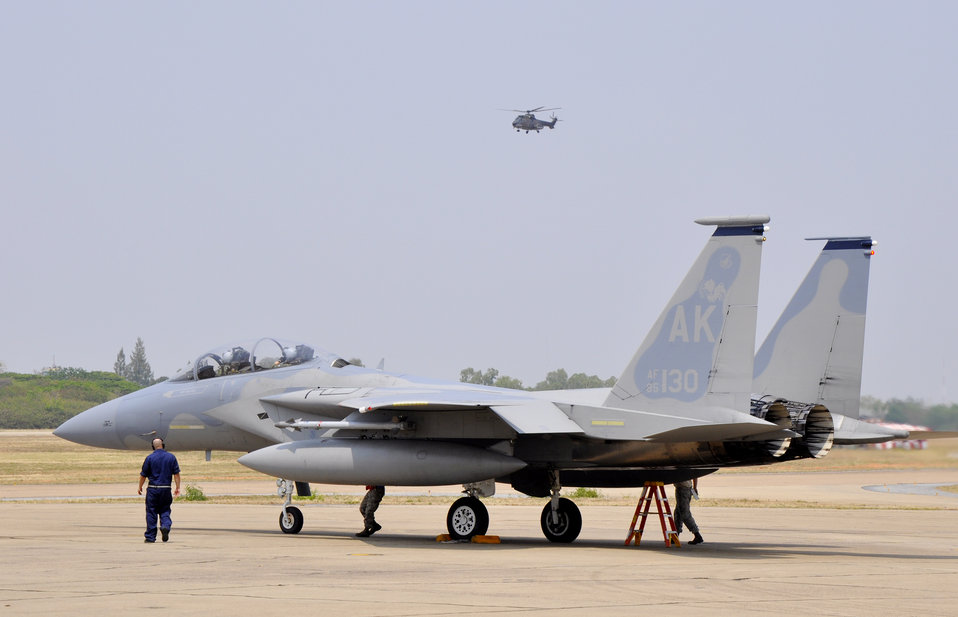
Cope Tiger 2010

A Republic of Singapore Air Force Super Puma helicopter hovers overhead as a U.S. Air Force F-15 Eagle prepares to take off March 9, 2010, at Korat Royal Thai Air Force Base, Thailand. U.S., Singapore and Thai air forces are participating in Cope Tiger, a multilateral aerial large force exercise that takes place annually.